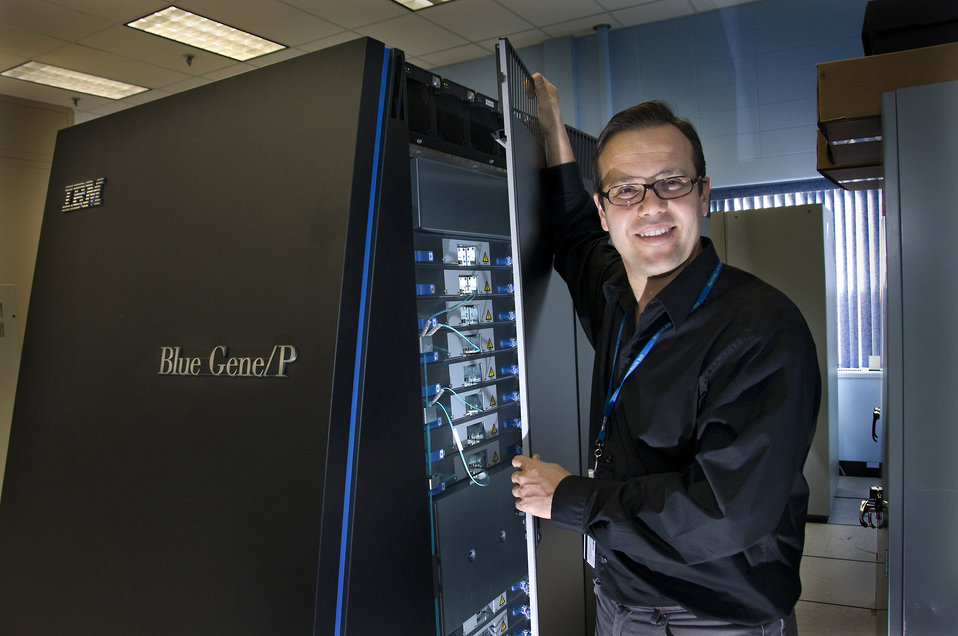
NEW YORK BLUE IS THE CENTERPIECE OF THE NEW YORK CENTER FOR COMPUTATIONAL SCIENCE (NYCCS).

New York Blue has an 18-rack configuration, a total of 36,864 processors and 18.4 TB of memory. It is the world's fastest supercomputer for general users and is expected to rank among the top ten fastest computers in the world. It is a cooperative effort between Stony Brook University and Brookhaven National Laboratory.